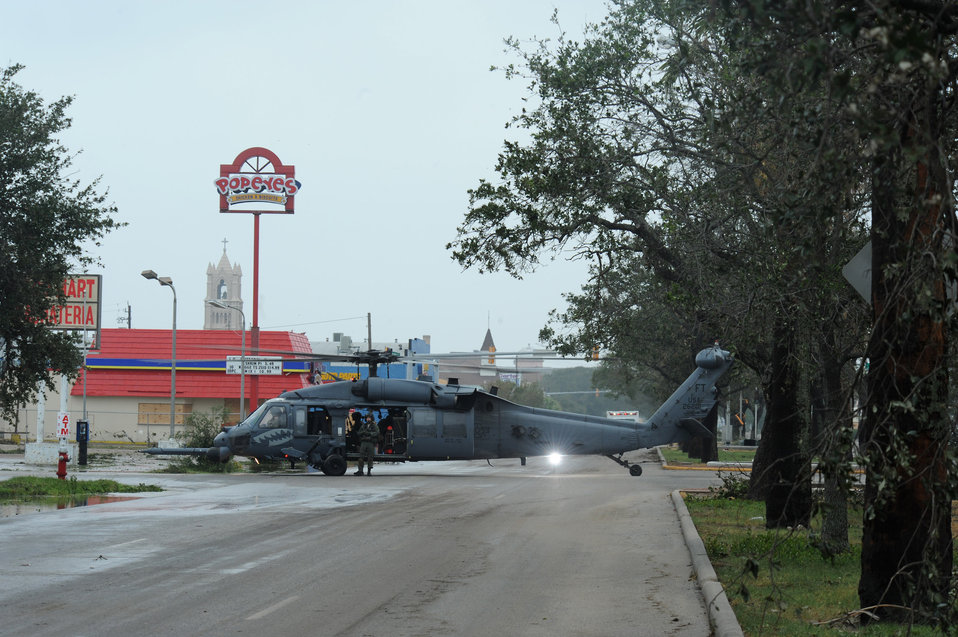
Airmen conduct search, rescue

An HH-60 Pave Hawk assigned to the 331st Air Expeditionary Group at Randolph Air Force Base, Texas, sits in the street during operations in Galveston, Texas, after Hurricane Ike, Sept. 13.